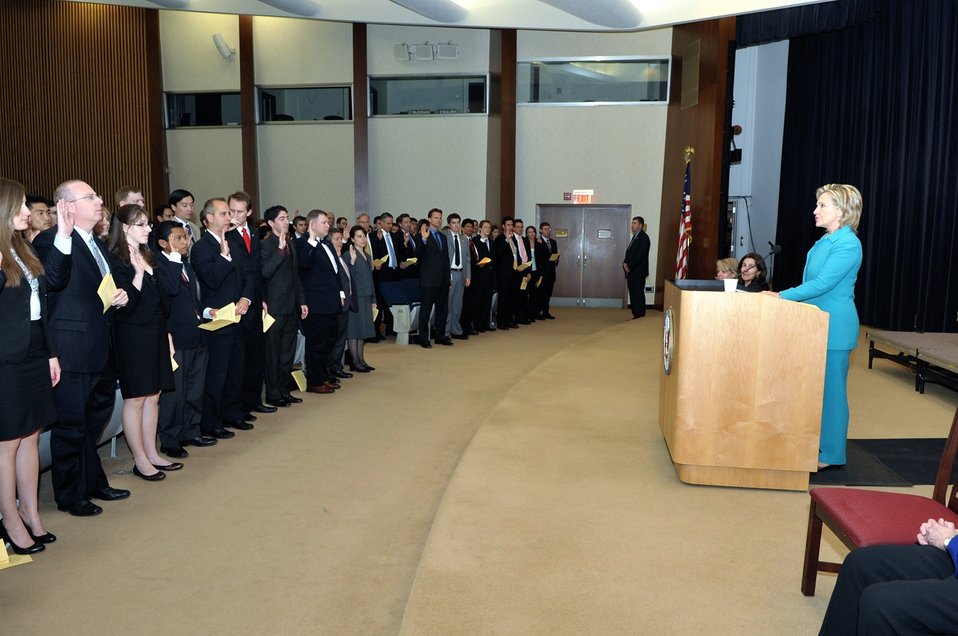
Secretary Clinton Officiates FSO Swearing In Ceremony

U.S. Secretary of State Hillary Rodham Clinton serves as the officiate at the Swearing In Ceremony for the 152nd Foreign Service Officer Orientation Class at the U.S. Department of State, Washington, DC, April 30, 2010.